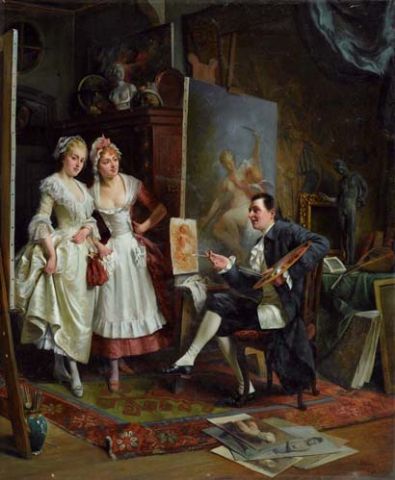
Deutsch: Im Atelier. Öl auf Leinwand, 68 x 58.5 cm